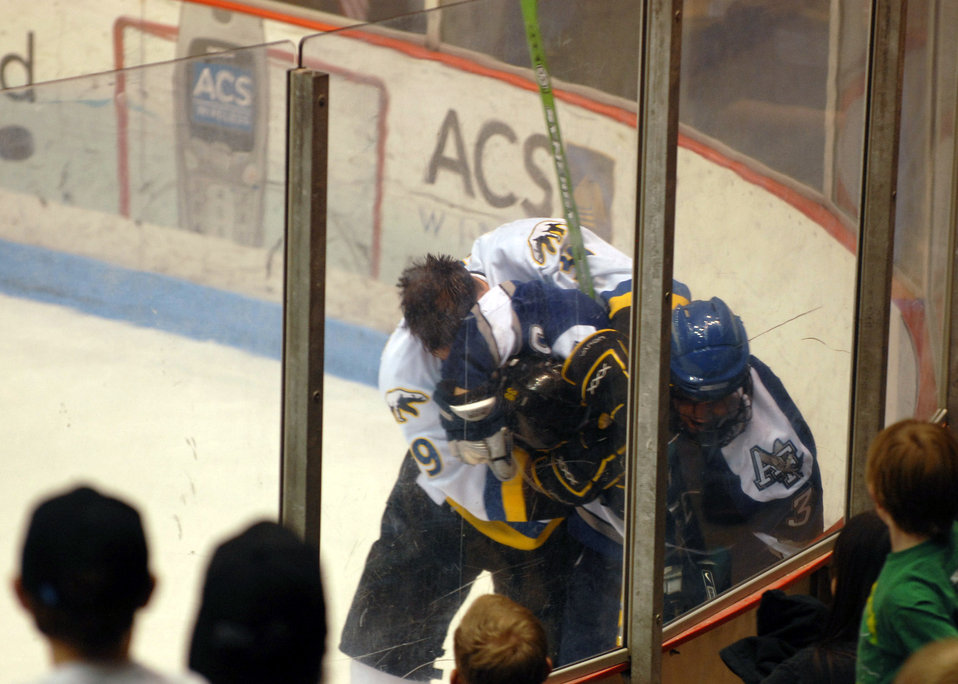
Falcons face tough ice foe

Kyle Greentree of the University of Alaska-Fairbanks Nanooks and Cadet 4th Class Chris Hepp of the U.S. Air Force Academy Falcons draw penalties for fighting during their match at the Carlson Center in downtown Fairbanks on Oct. 14. The Nanooks went on to win the game 8 to 4. The Falcons fell to 1-3 for the season.